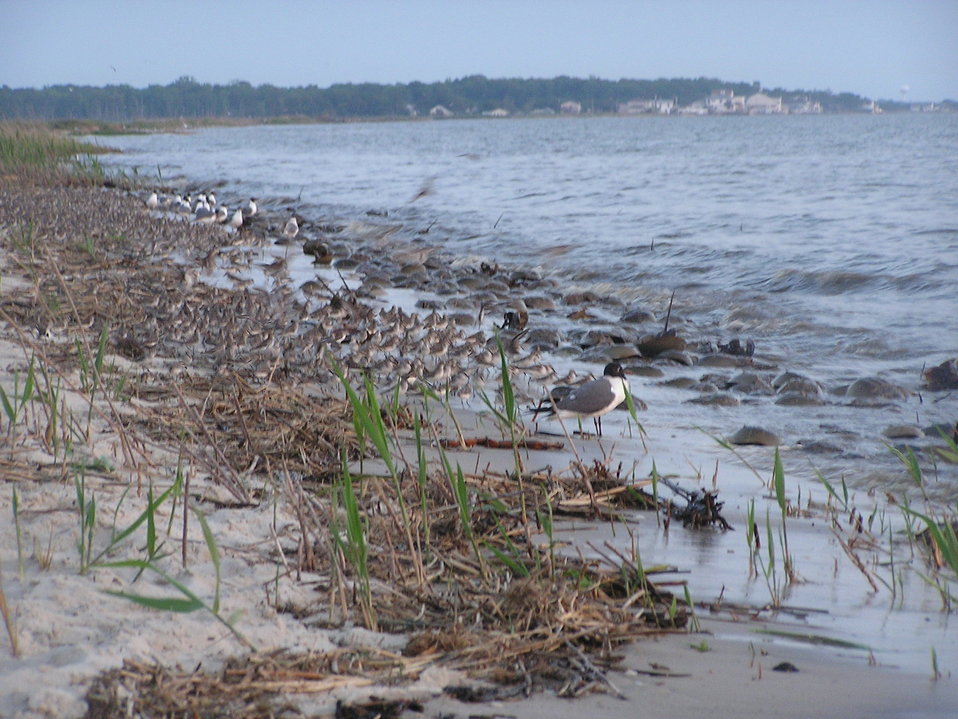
Shorebirds and horseshoe crabs at Cape May National Wildlife Refuge.